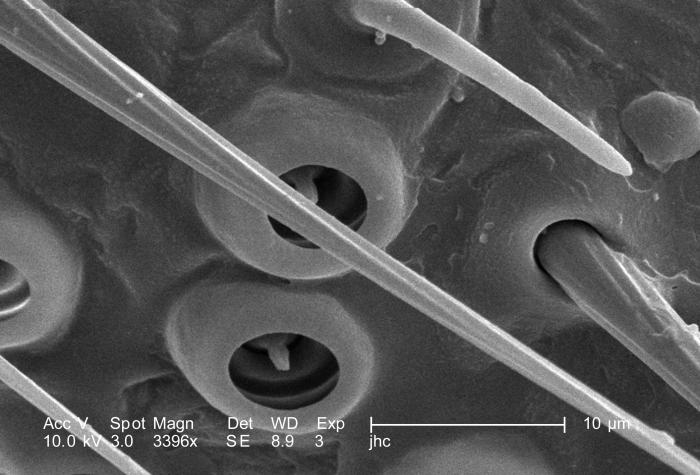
Under a high magnification of 3396X, approximately 4X the magnification of PHIL 9990, this scanning electron micrograph (SEM) revealed some of the exoskeletal ultrastructural morphology of an unidentified debris-laden insect, which had been discovered deceased in the suburbs of Decatur, Georgia. Depicted in this particular image was a section of one of the insect's six legs, which emanated from its thoracic region, located between its head and abdominal regions. The fact that this organism maneuvered about on jointed legs, placed it into the Phylum Arthropoda, i.e., Arthro